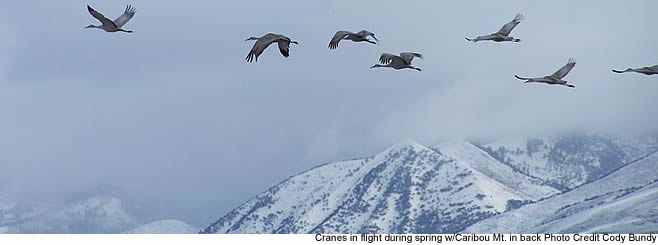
Cranes in Flight - Grays Lake National Wildlife Refuge

Winters in Grays Lake National Wildlife Refuge in southeastern Idaho are long and severe. Cranes are seen in the foreground with Mt. Caribou in the background.